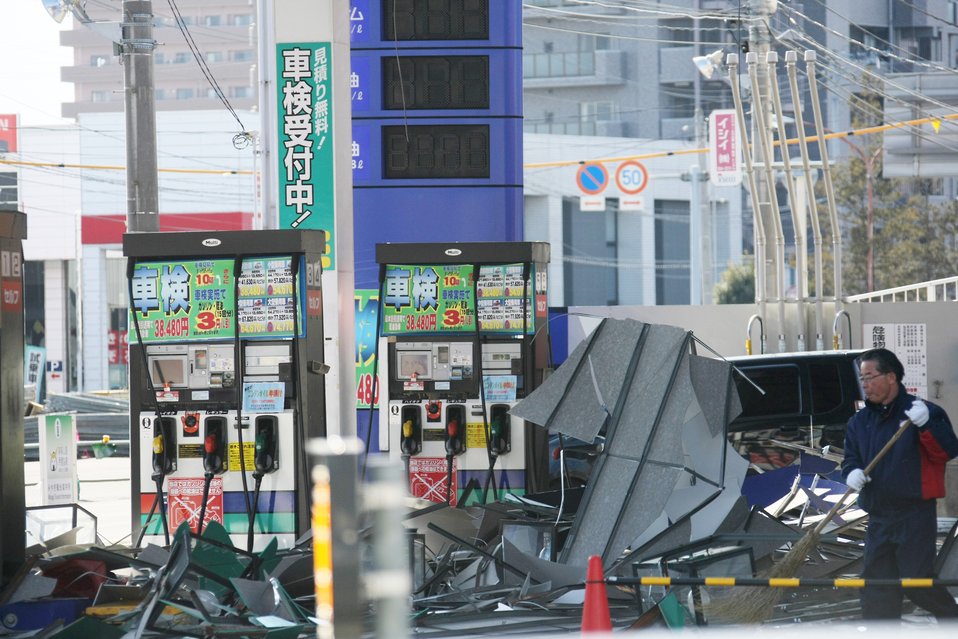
Disaster Relief Support

Disaster Zone at Sendai City.